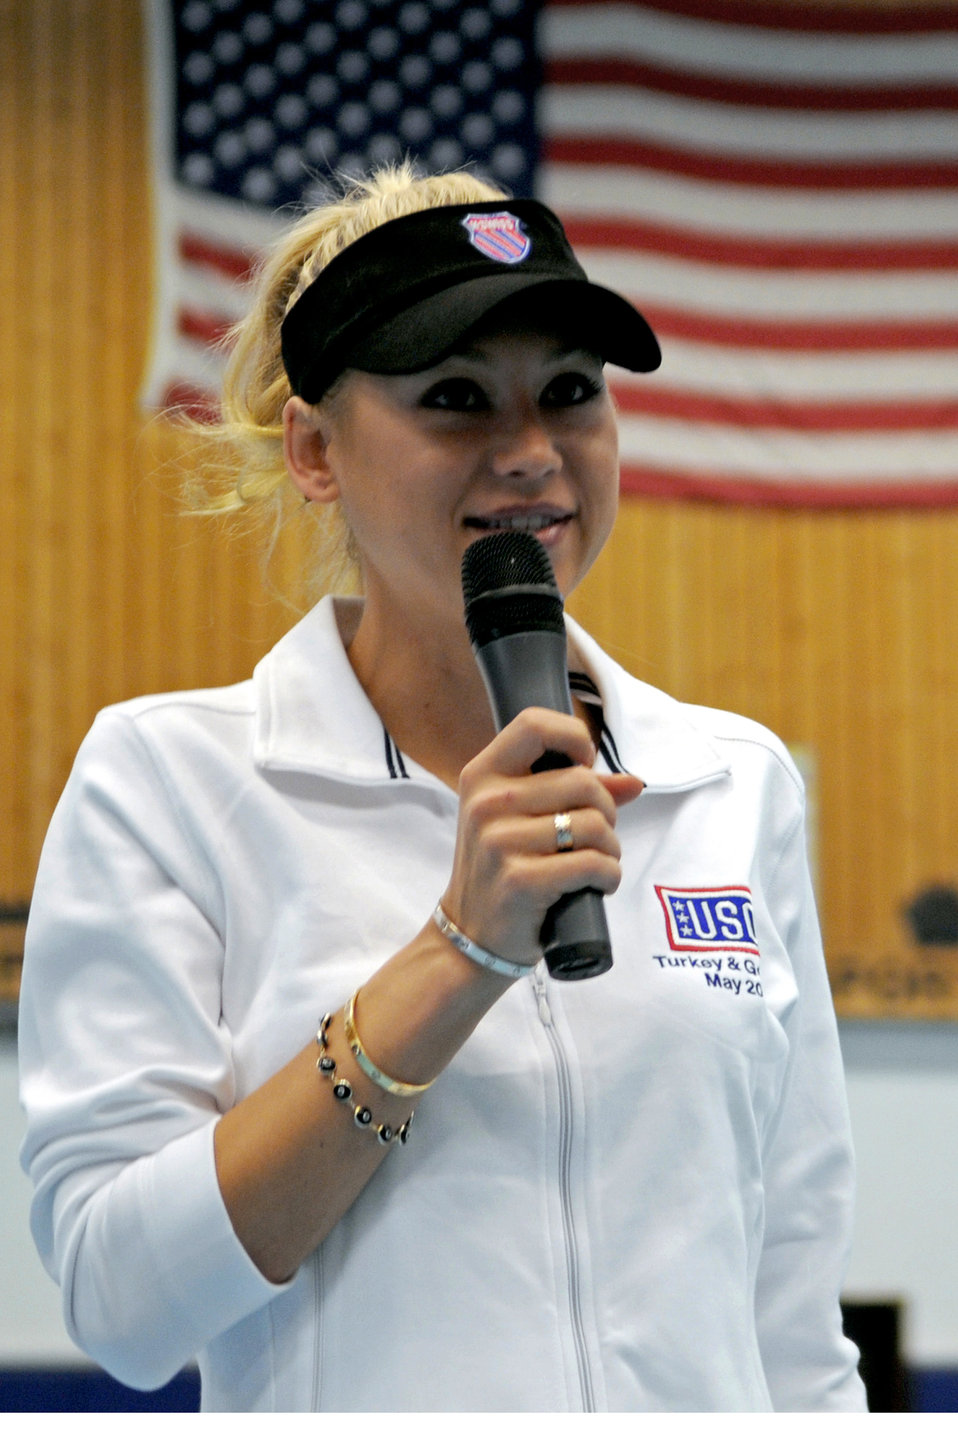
Anna Kournikova visits Ramstein students

Anna Kournikova talks to Ramstein High School students May 19 at Ramstein Air Base, Germany. She talked to them about school, her tennis career and working hard. Ms. Kournikova, a former professional tennis player, visited with students as part of a six-day educational United Service Organizations tour.